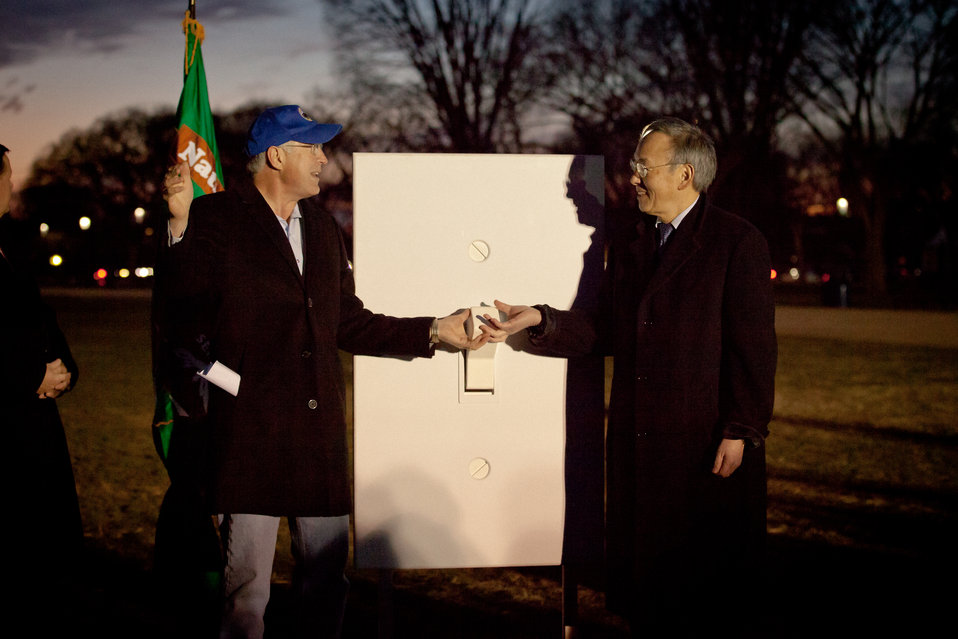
Interior Secretary Ken Salazar (Left) and Energy Secretary Steven Chu (Right) flip the switch to shine LED lighting on the elm paths of the East side of the mall.